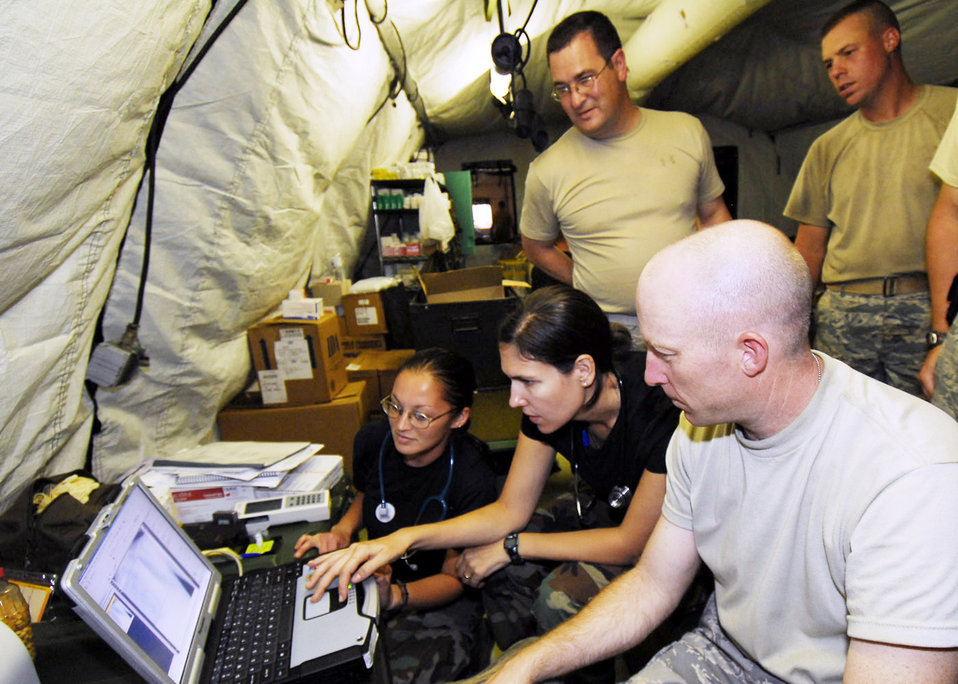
HARRT arrives in Indonesia

Air Force humanitarian assistance rapid response team members examine a patient's lung x-ray Oct. 7, 2009, in Padang, Indonesia. The HARRT has set up a mobile field hospital to provide medical care to those injured by the recent earthquakes in Indonesia.